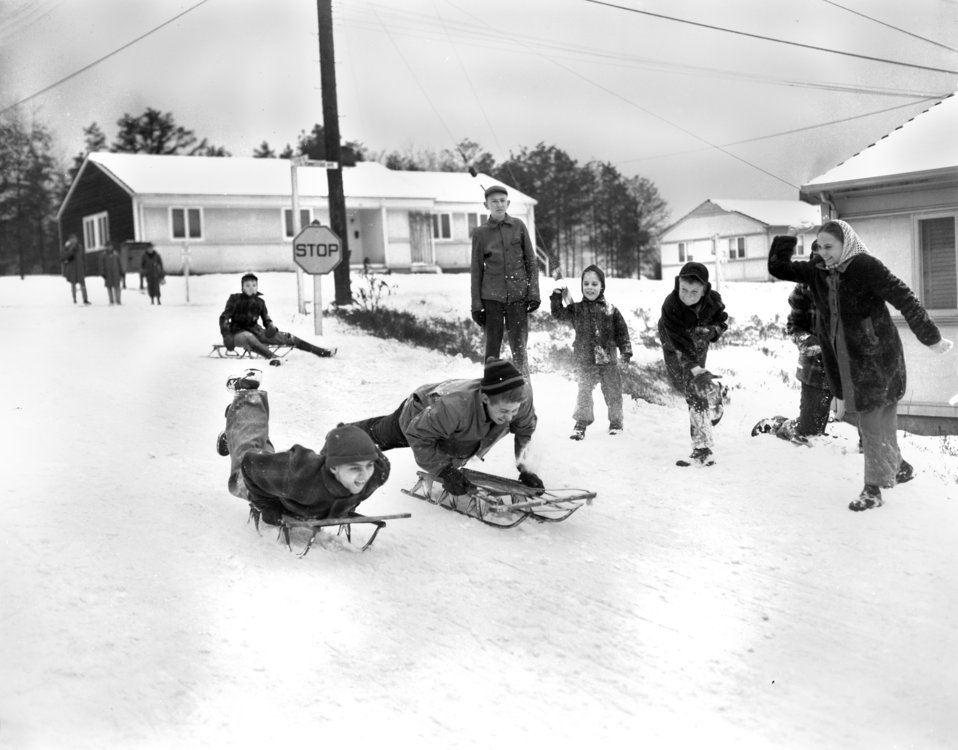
Fun in the Snow 4

426-7 DOE Photo by Ed Westcott Oak Ridge Tennessee 1-25-1948